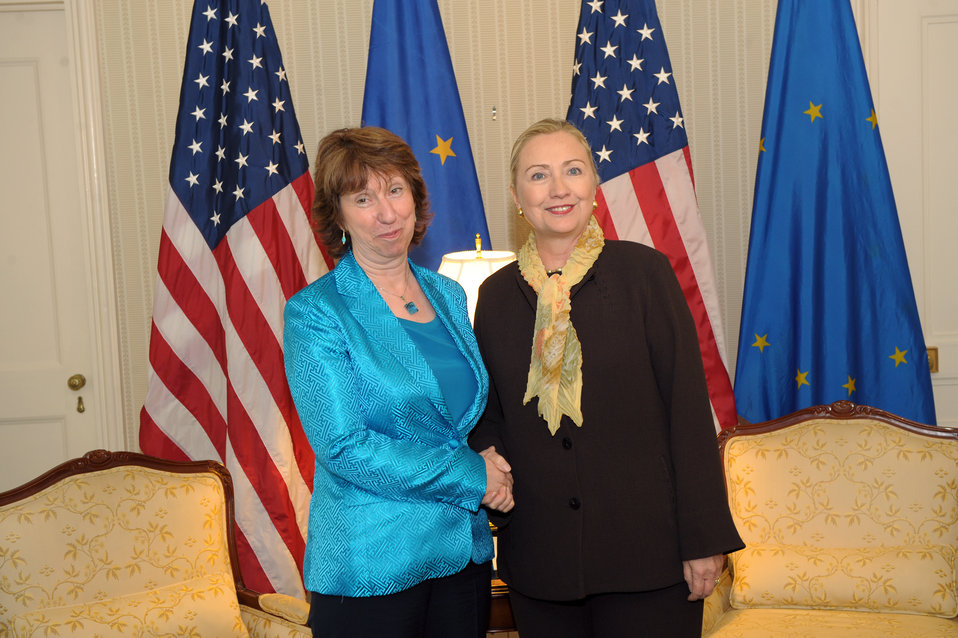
Secretary Clinton Meets With EU High Representative Catherine Ashton

U.S. Secretary of State Hillary Rodham Clinton meets with EU High Representative Catherine Ashton and European Foreign Ministers, at the Waldorf-Astoria Hotel in New York, New York, on September 22, 2011.